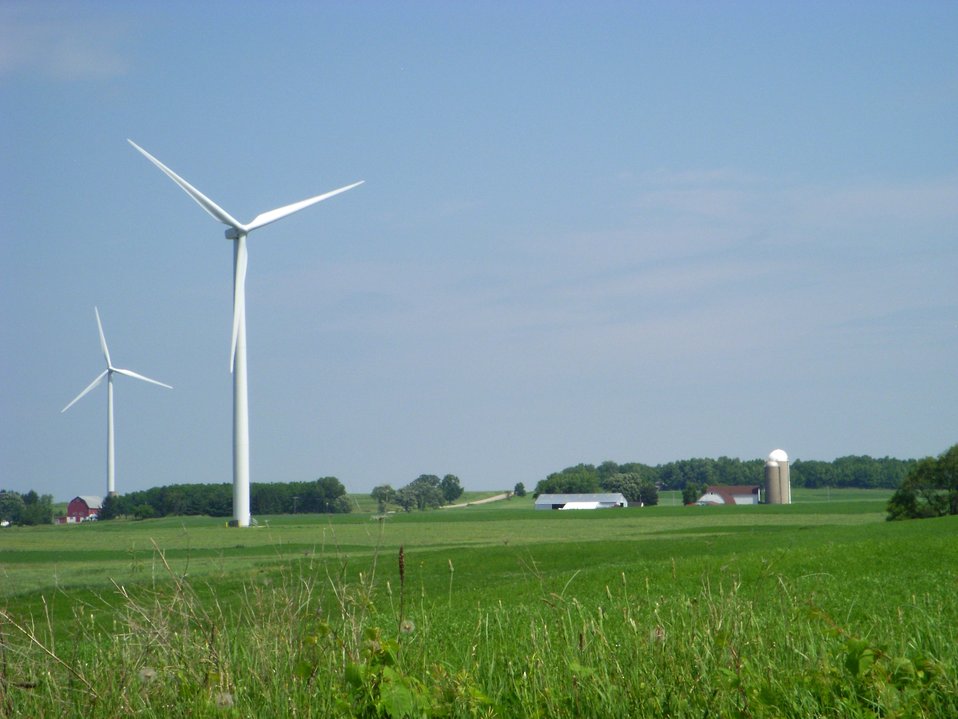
Invenergy is the developer of the 129-mw Forward Wind Energy center Project near Fond Du Lac, Wisconsin, that came online in 2008.